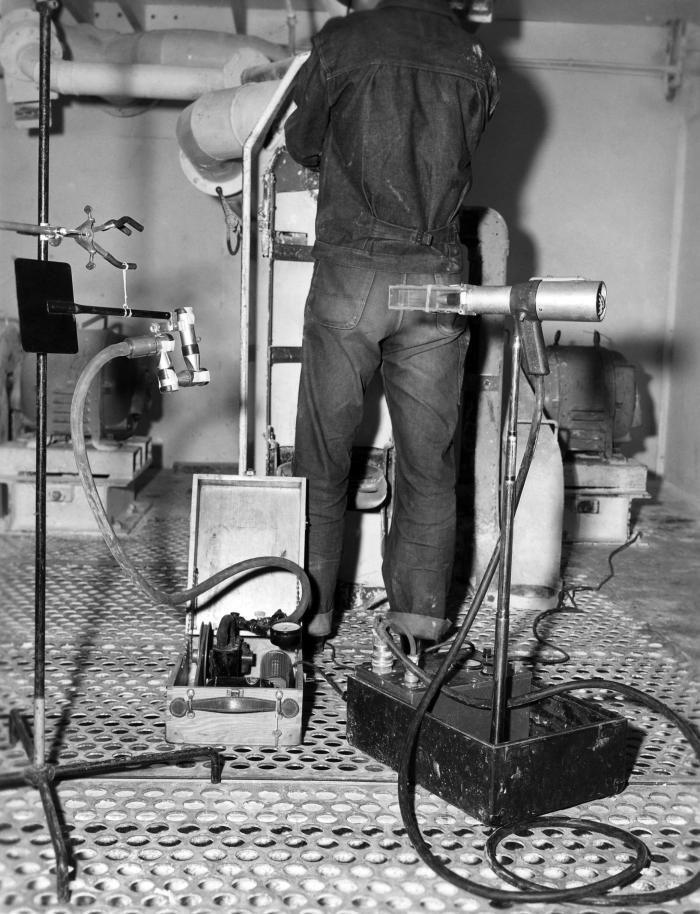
From 1958, this historical image was provided by the Center for Disease Control's (CDC), National Institute for Occupational Safety and Health (NIOSH). It depicted industrial medicine in action, and was used in the U.S. Public Health Service (USPHS) publication, no. 601, entitled, 'Pneumoconiosis in Diatomite Mining and Processing', 1958. The photograph showed an Industrial Hygiene Division (IHD) investigator taking workplace air samples, in order to monitor air quality. This publication featured results of the Lompoc, California study of diatomaceous earth's negative health effects. The substance is a non-chemical pest control, consisting of the fossilized calcific remains of free floating algae called 'diatoms'. The naturally occurring, soft, chalk-like sedimentary rock material easily crumbles into powder, so its fine, but abrasive properties make it useful as a mechanical pesticide.